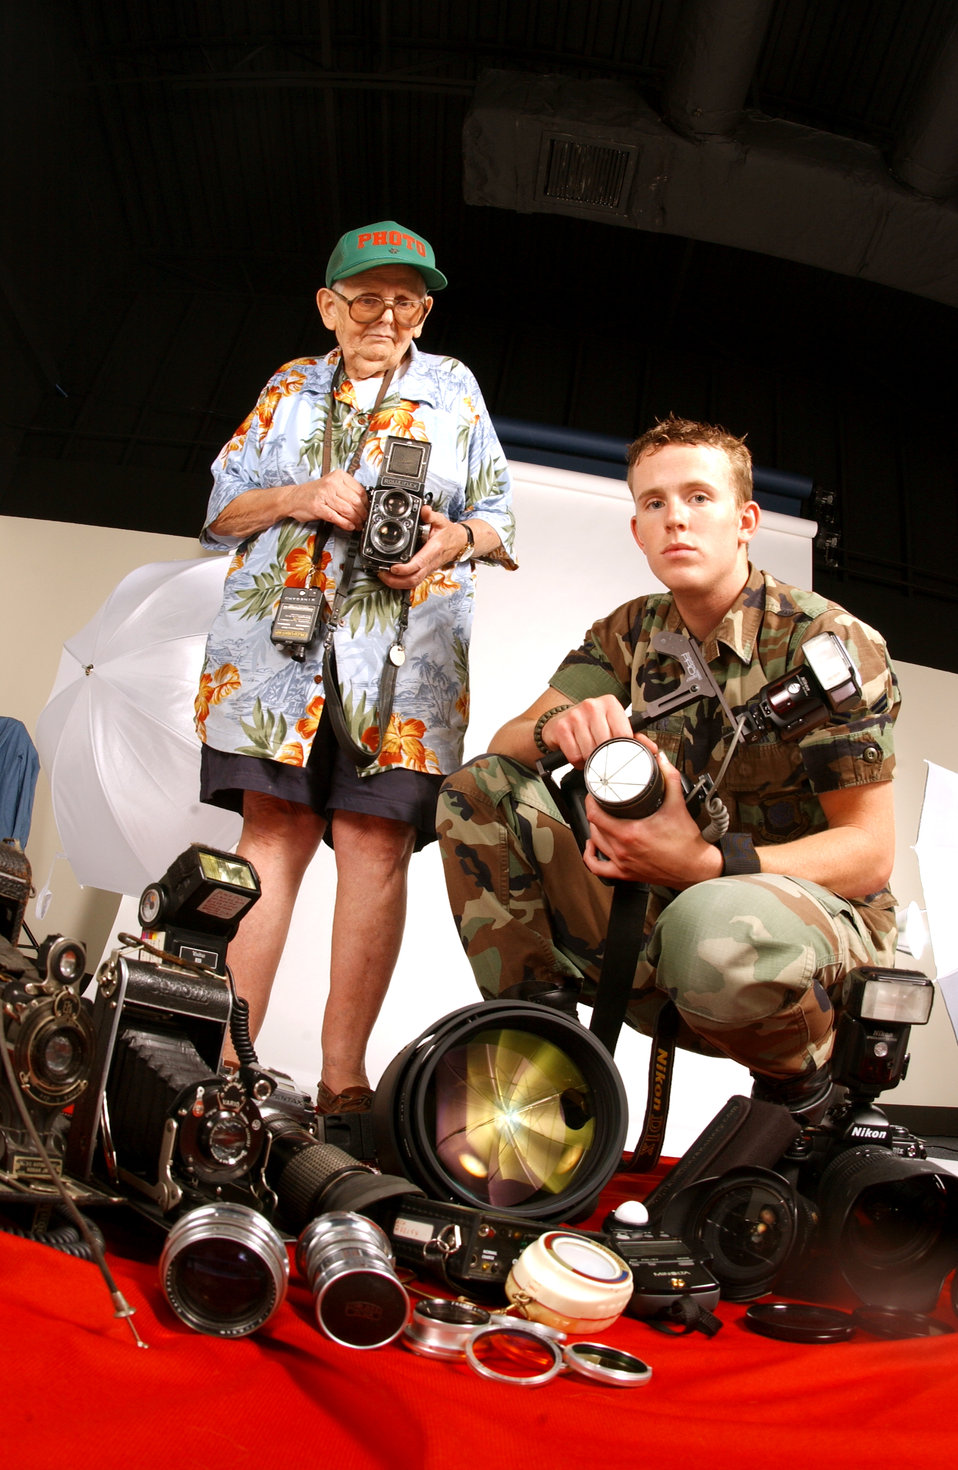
Vietnam vet shares skills as photographer with next generation

FAIRCHILD AIR FORCE BASE, Wash. -- Airman 1st Class Clay Lancaster has been trained in digital photography, but has strived to learn everything he can from his mentor, A. Gordon Winegard, an 80-year-old veteran of film photography. Mr. Winegard has been a part of the Fairchild community for more than 31 years since his retirement from the Air Force in 1972. Airman Lancaster is a photographer with the 92nd Communications Squadron.